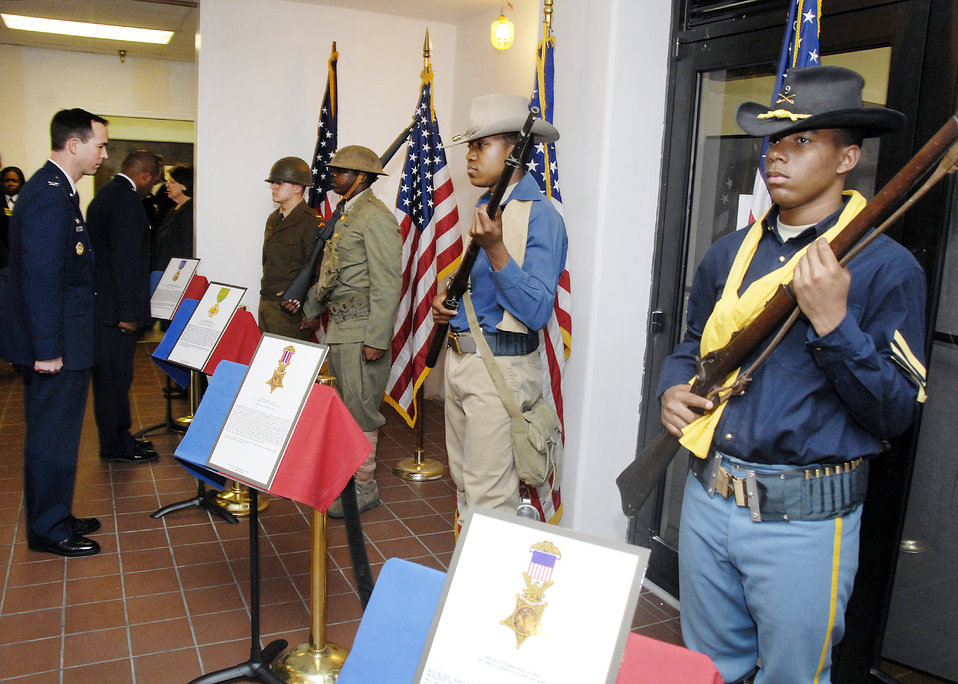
Gray shares legacy of Buffalo Soldiers

Airmen wearing the uniforms of Medal of Honor recipients from the Civil War, through the Vietnam War time frame serve as live models at the Living Legends Banquet Museum Feb. 19, 2010, at the Sheppard Air Force Base community center.